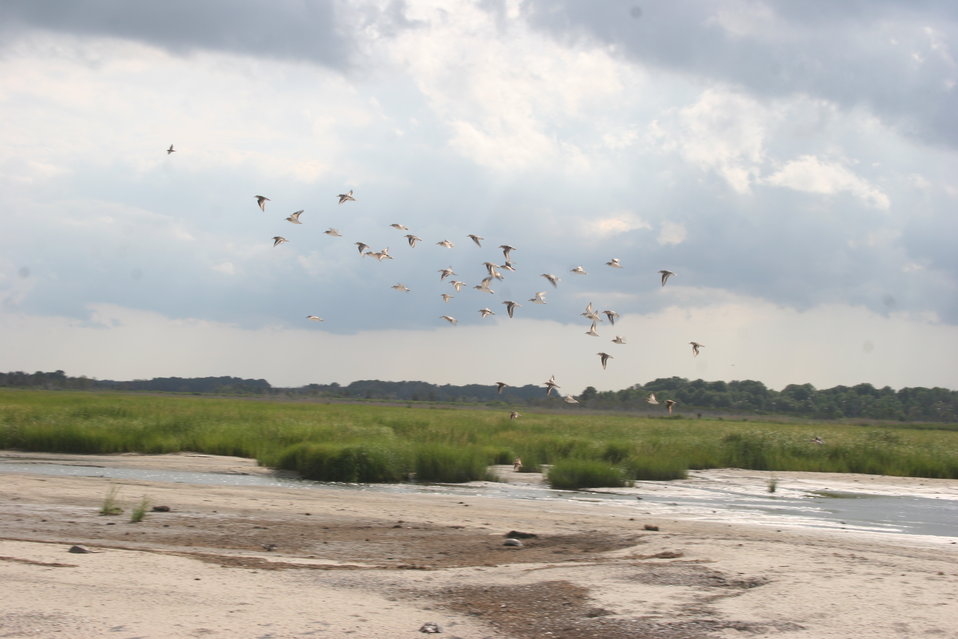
Shorebirds at Prime Hook NWR